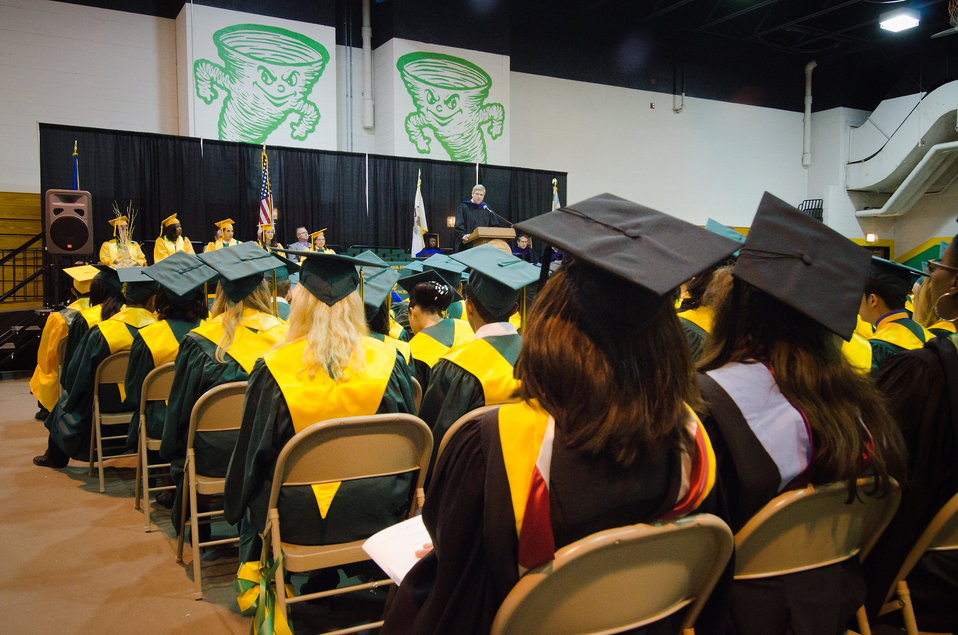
Agriculture Secretary Tom Vilsack delivers the 2012 commencement address at the Chicago High School for Agricultural Sciences in Chicago, Illinois on Friday, June 8, 2012. Secretary Vilsack discussed innovation in the food and agricultural industries and the importance of the American agriculture sector in expanding economic opportunity and creating jobs in communities throughout the country.